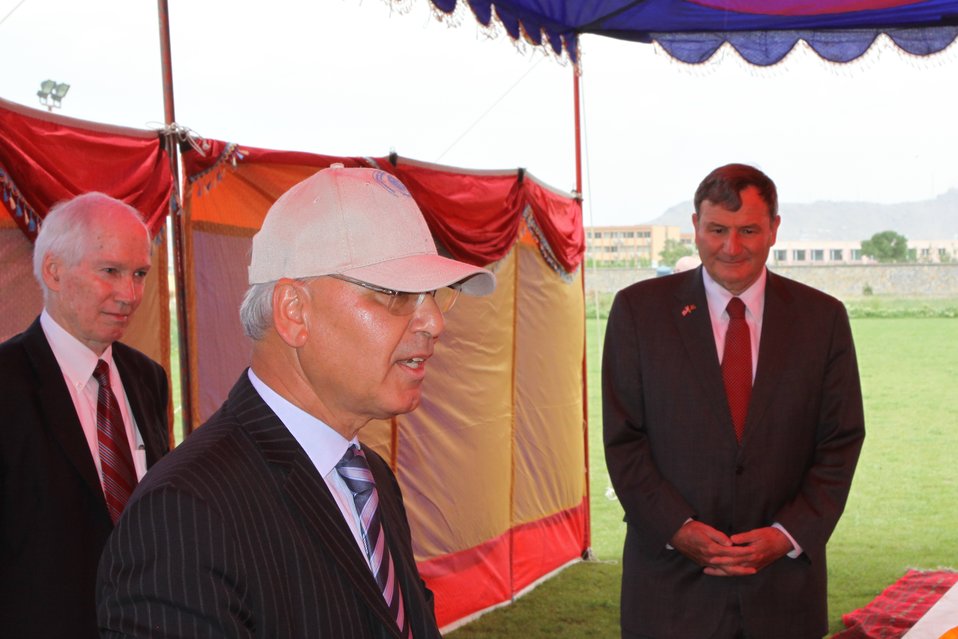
100526 AUAF Graduation 387